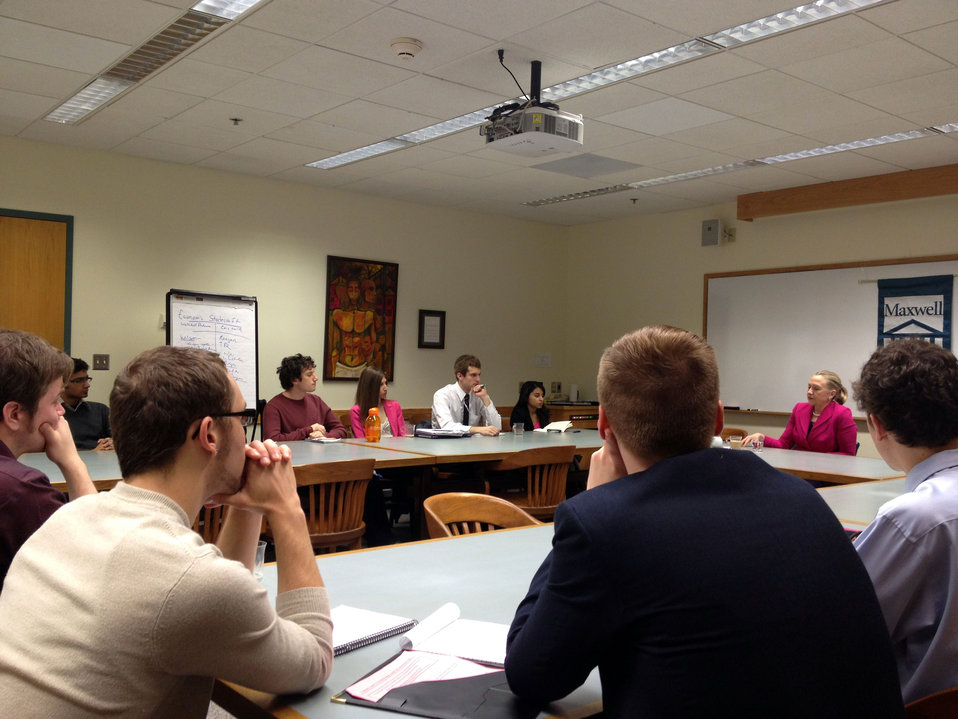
Secretary Clinton Speaks With Students at the Maxwell School of Syracuse University

U.S. Secretary of State Hillary Rodham Clinton speaks with students at the Maxwell School of Syracuse University in Syracuse, New York, on April 23, 2012.